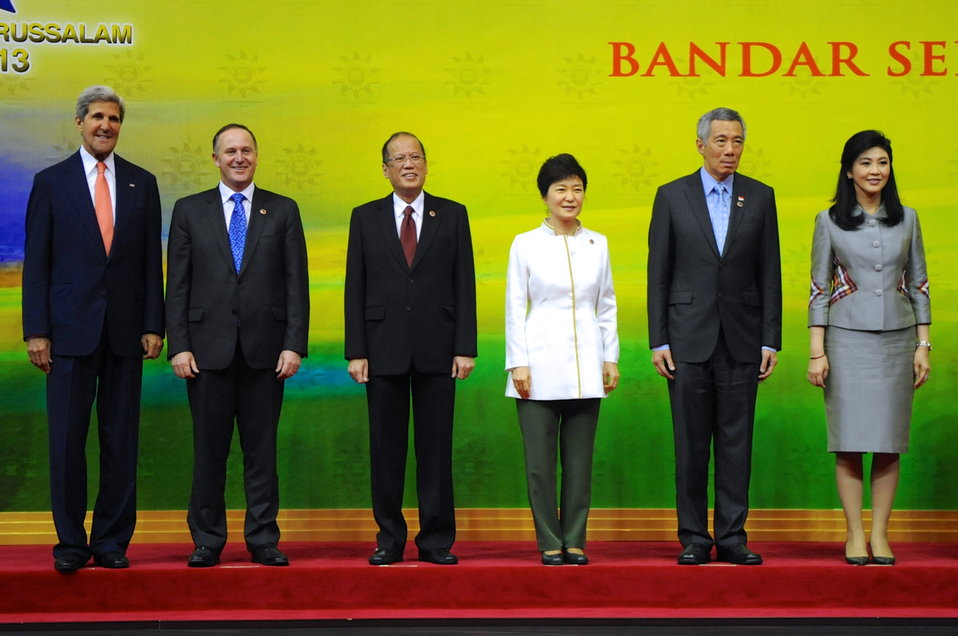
Secretary Kerry Stands With Southeast Asia Regional Leaders

U.S. Secretary of State John Kerry, far left, joins leaders of Southeast Asian countries for a group photo before the East Asia Summit in Bandar Seri Begawan, Brunei, on October 10, 2013.